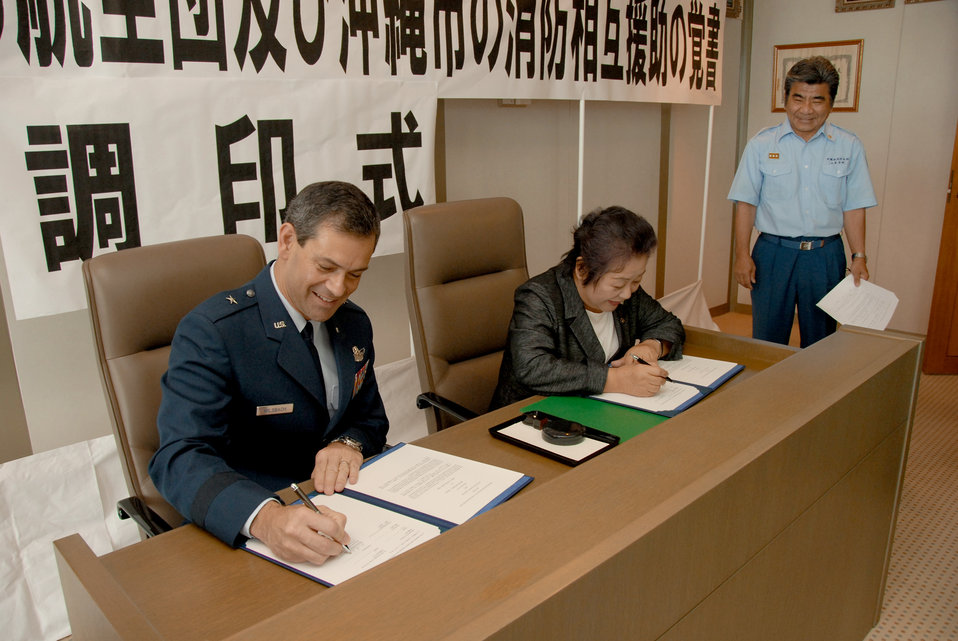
18th Wing, Okinawa City fire department cooperation

Brig. Gen. Kenneth S. Wilsbach and Mitsuko Tomon sign a memorandum of understanding to formalize cooperation between their respective fire departments July 2, 2010, in Okinawa, Japan. The MOU establishes a framework for mutual aid in the case of fire emergencies. General Wilsbach is the 18th Wing commander. Ms. Tomon is the mayor of Okinawa City.